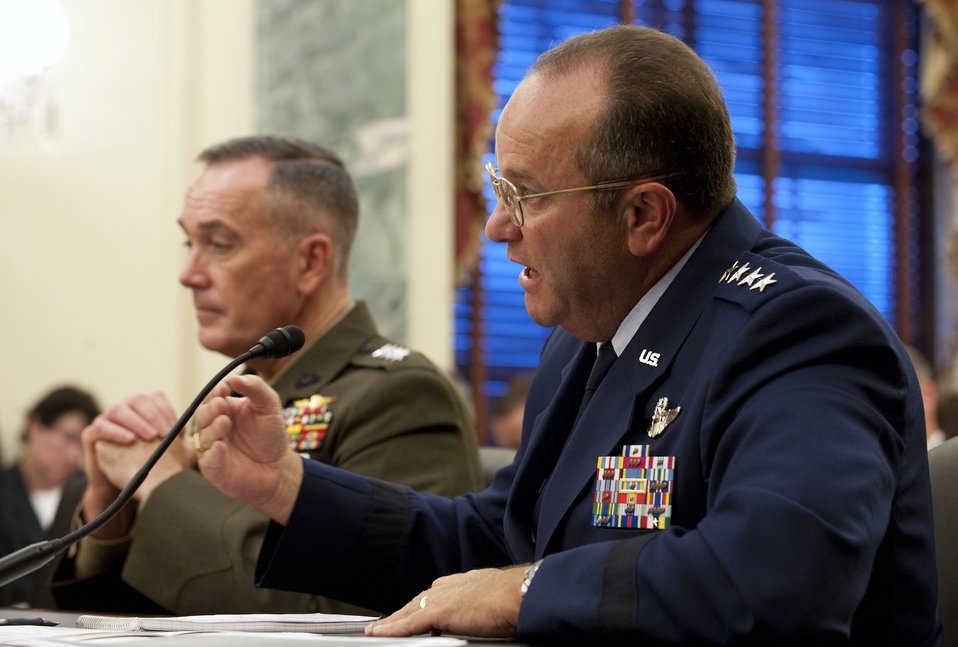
Air Force vice chief testifies on GO, SES numbers

Air Force Vice Chief of Staff Gen. Phil Breedlove (right) answers a question about general officer and senior executive service authorizations in the military Sept. 14, 2011, in Washington, D.C., during a hearing of the Senate Armed Services Committee's Subcommittee on Personnel. Also pictured is Assistant Commandant of the Marine Corps Gen. Joseph Dunford, Jr.